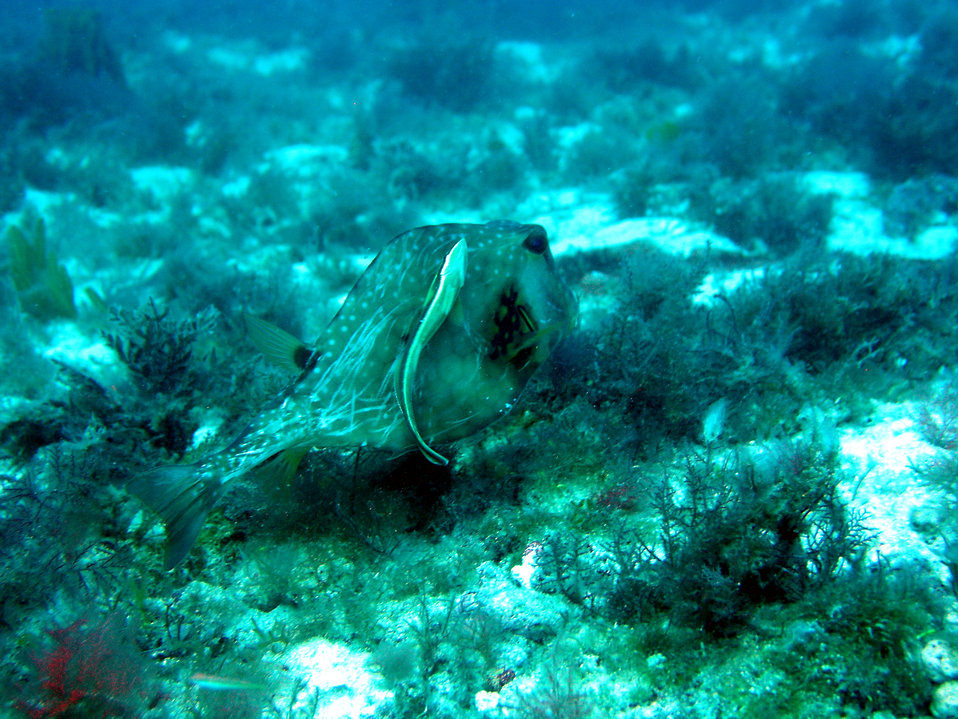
Trunkfish (Lactophrys trigonus) with whitefin sharksucker (Echeneis neucratoides)